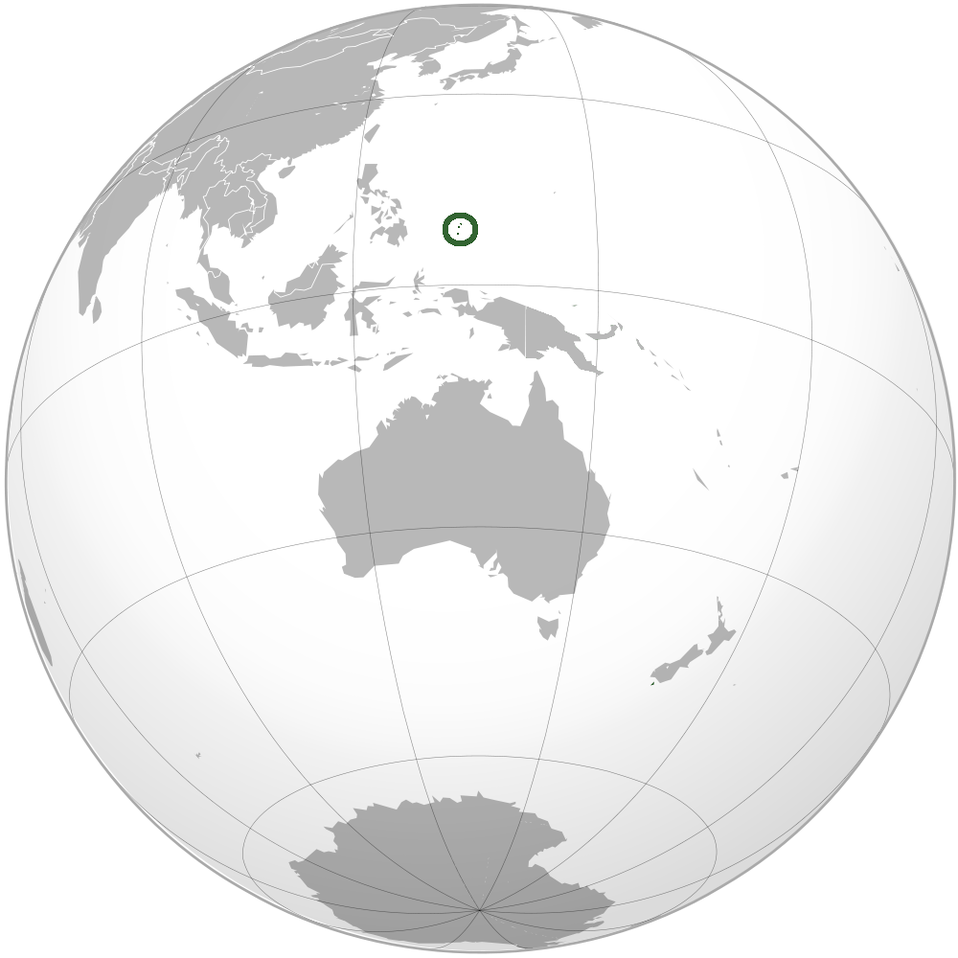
The location of Palau is marked in green and in turn circled in green for better identification.